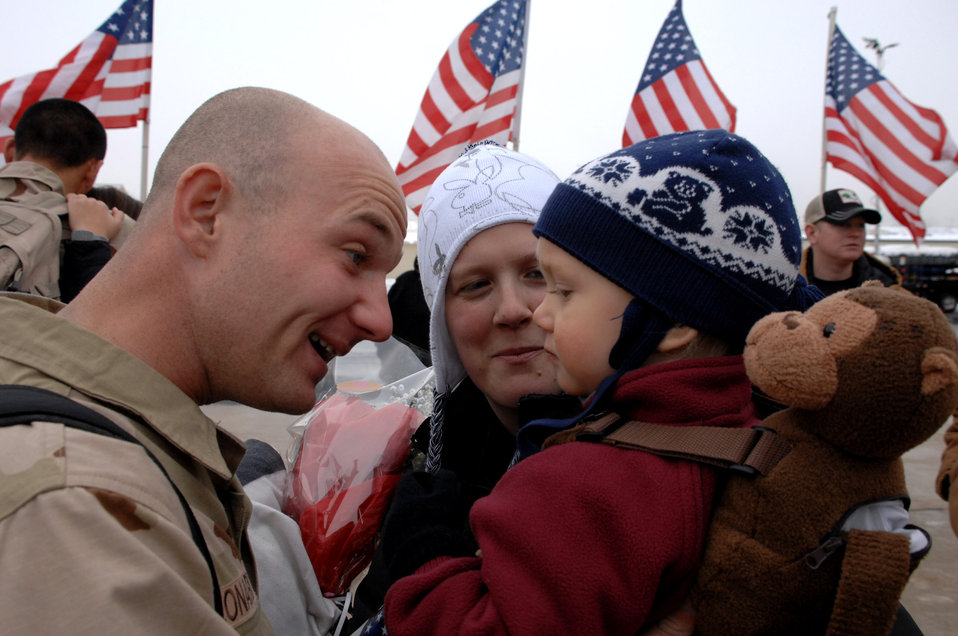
Home at last

Staff Sgt. Eric Leonhard greets loved ones during a 4th Fighter Squadron homecoming ceremony Jan. 8 at Hill Air Force Base, Utah. The 4th FS deployed to Balad Air Base, Iraq in August and flew approximately 1,800 missions in support of ground forces in Operation Iraqi Freedom.